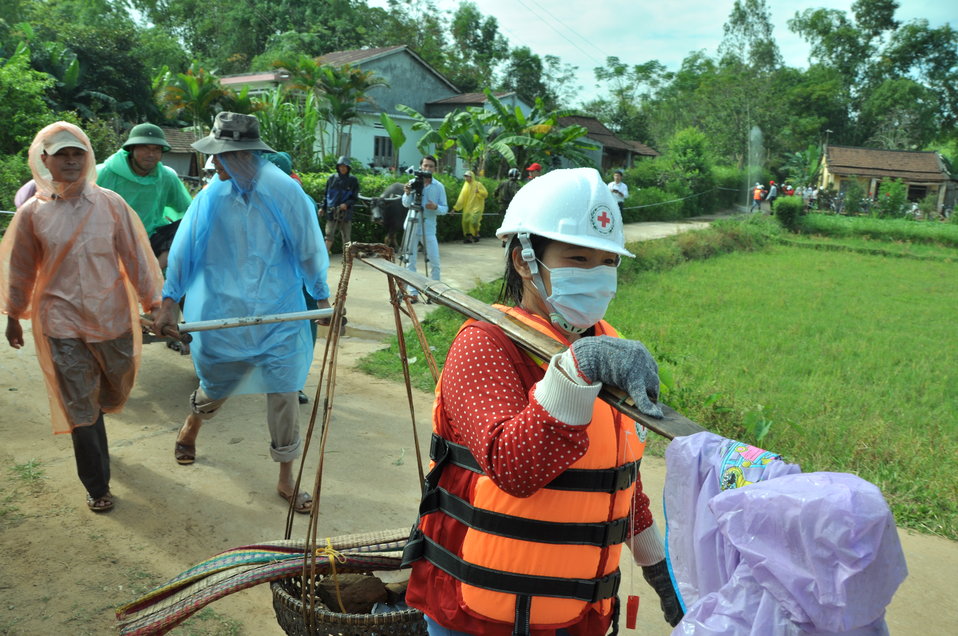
USAID, Red Cross Support Disaster Response Drill in Duy Hoa Commune, Quang Nam Province

Duy Hoa Commune, Quang Nam Province
December 5, 2012